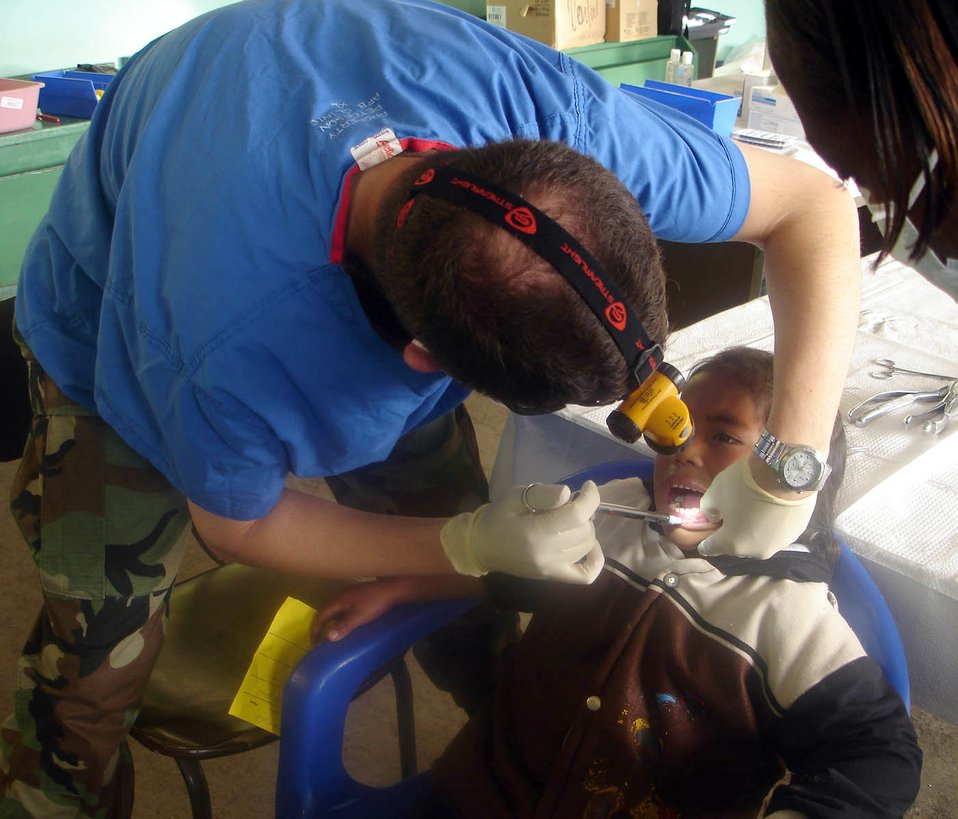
Air Force medics in Ecuador

OTAVALO, Ecuador (AFPN) -- Capt. (Dr.) Roger Miller numbs an Ecuadorian girl's mouth before pulling a tooth. Air Force teams from the U.S. and Ecuador pulled more than 2,000 teeth during the 10-day medical readiness exercise. Captain Miller is a dentist from the 21st Medical Group at Peterson Air Force Base, Colo.